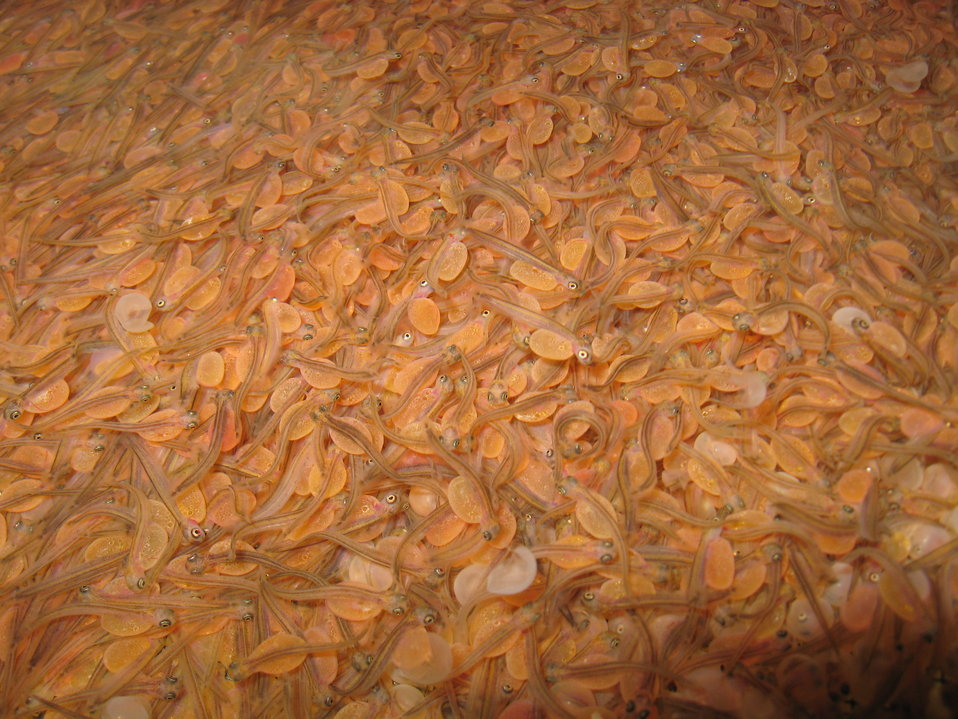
Hatched trout eggs

The eggs are beginning to hatch and their fry will be moved to the outdoor raceways in spring. These fish will be grown for 18 months to “fingerling” size and then stocked into lakes Erie and Ontario in May 2013.